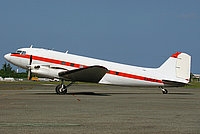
re-engined DC-3